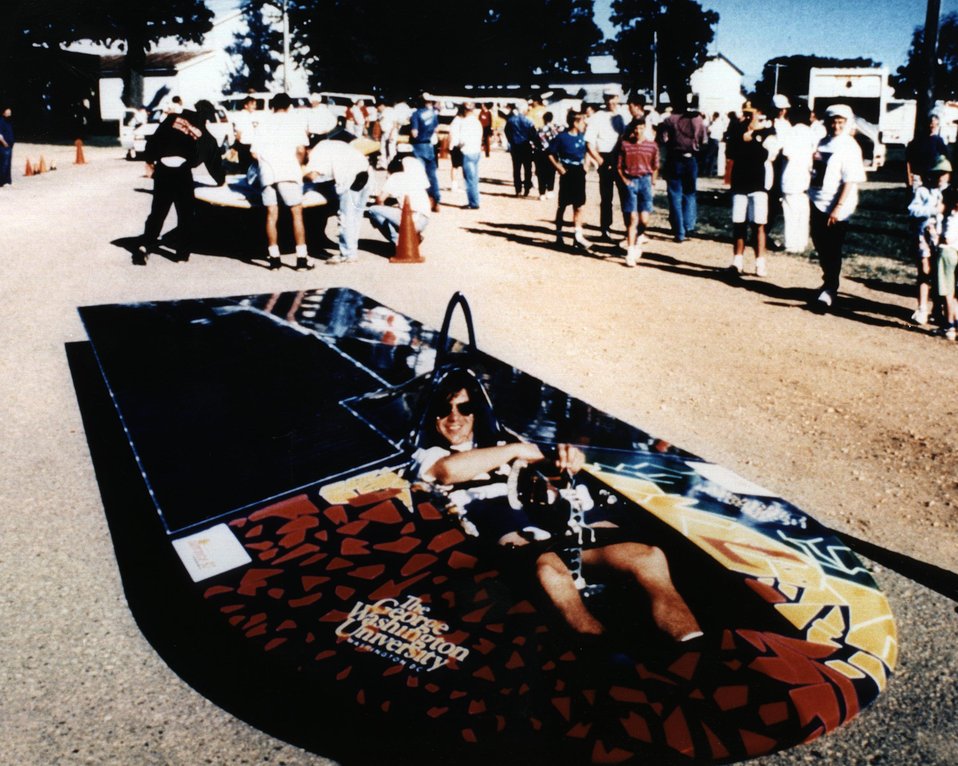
GEORGE WASHINGTON UNIVERSITY IN WASHINGTON, DC ENTERED THEIR FIRST SOLAR CAR 'SUNFORCE 1' WHICH CAME IN FOURTH. TEAM CONSISTS OF ENGINEERING BUSINESS AND LIBERAL ARTS STUDENTS.